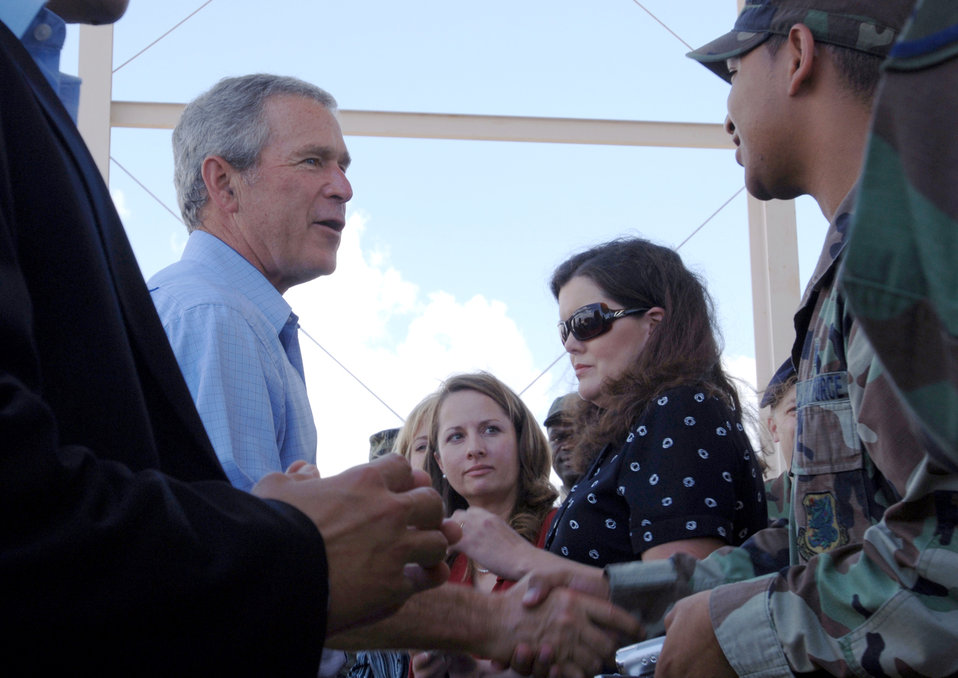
President Bush visits Keesler

President George W. Bush meets with Airmen and civilians during a stop at Keesler Air Force Base, Miss., Aug. 28, during his visit to the Gulfport region to view the area devastated by Hurricane Katrina one year ago.